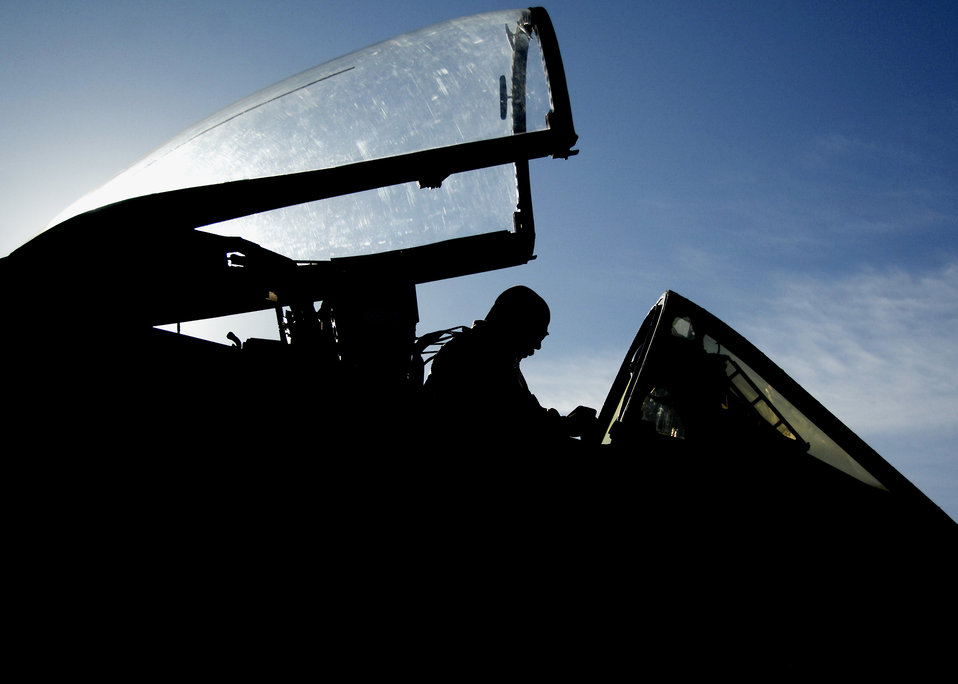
A-10 pilots prepare for mission

Capt. Mike Hobson performs preflight checks in the cockpit of an A-10 Thunderbolt II before taxiing out to the runway for take-off Kandahar Airfield, Afghanistan, Dec. 24, 2009.